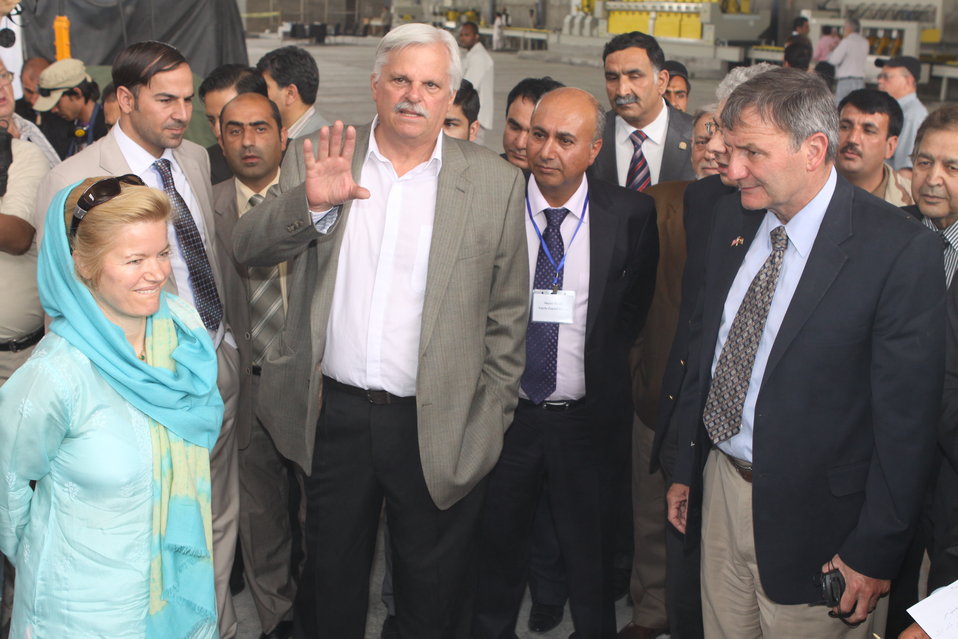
100525 Hirat Marble Conference 481